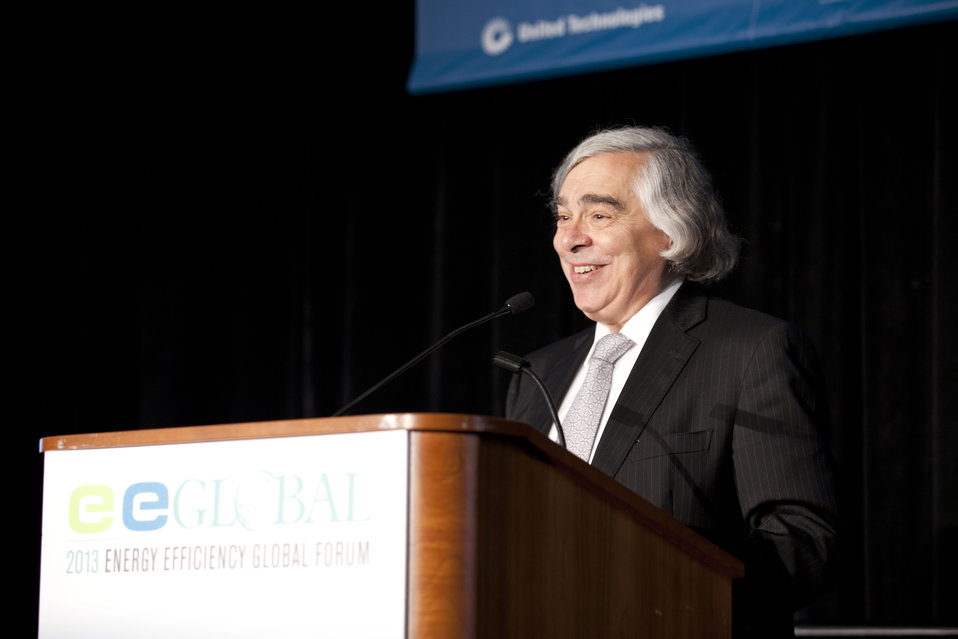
Secretary Moniz at the 2013 Energy Efficiency Global Forum

Shortly after being sworn in as Secretary of Energy, Dr. Moniz delivered remarks at the 2013 Energy Efficiency Global Forum, assuring that energy efficiency will be a 'big focus' for the Department of Energy.